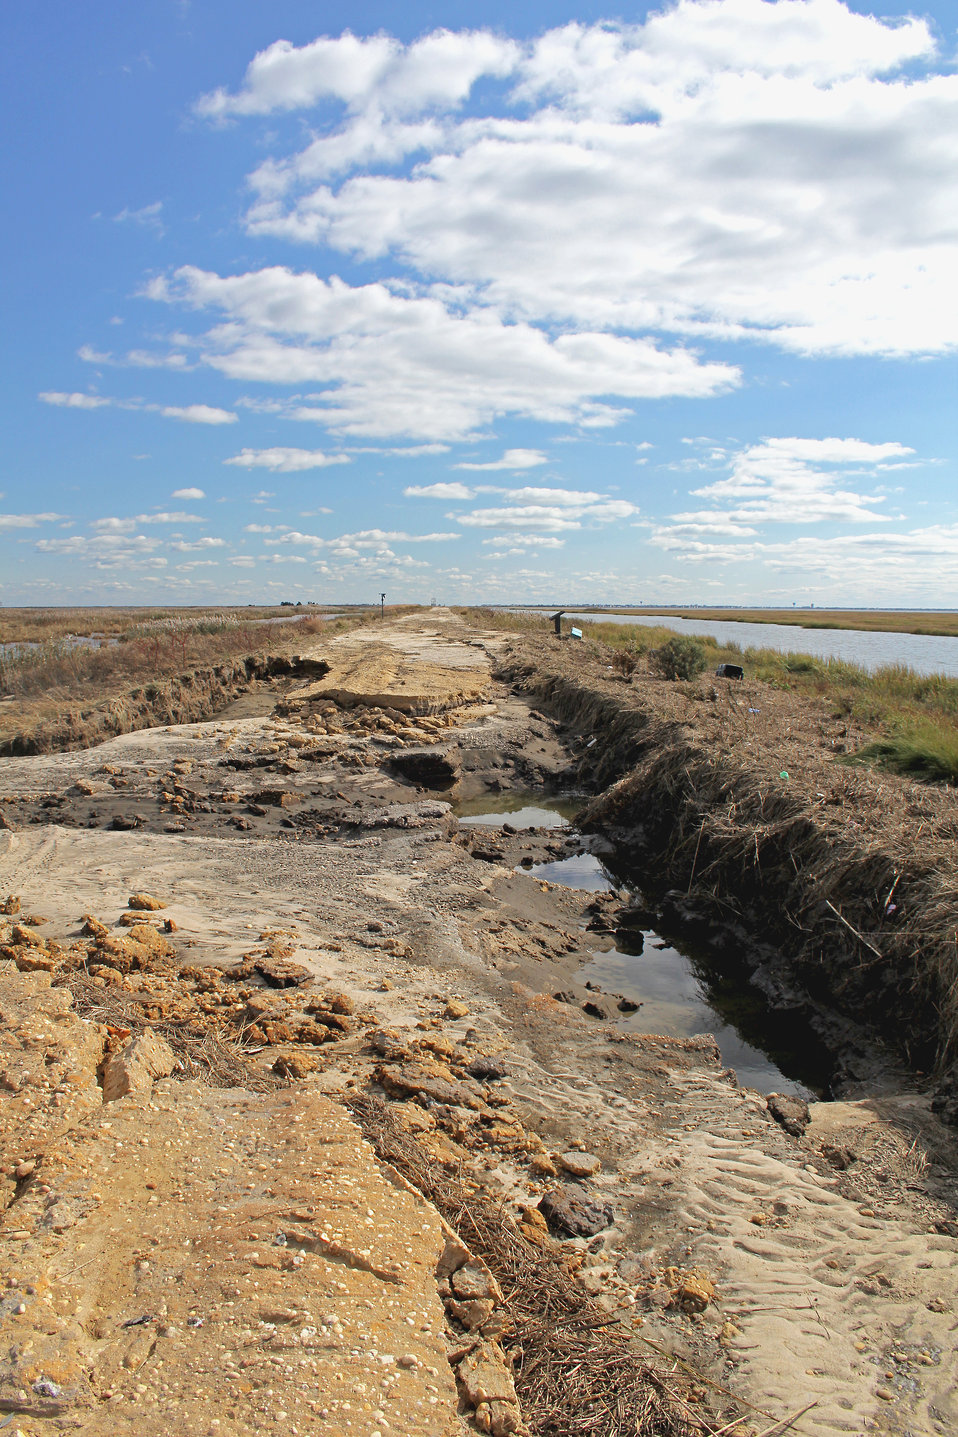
Superstorm Sandy damages to the Edwin B. Forsythe National Wildlife Refuge Wildlife Drive (NJ)

The south dike of the wildlife drive was seriously damaged by Sandy.